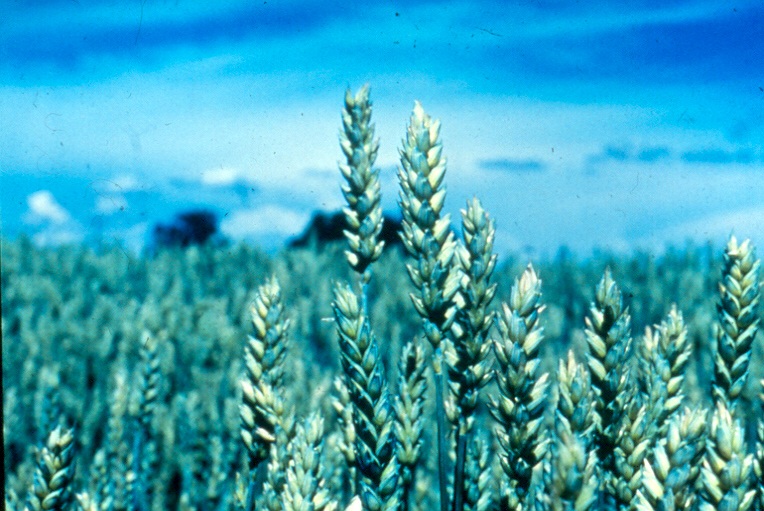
Barley Wheat Salmon FIeld Office UCSC Upper Columbia Salmon Clearwater District